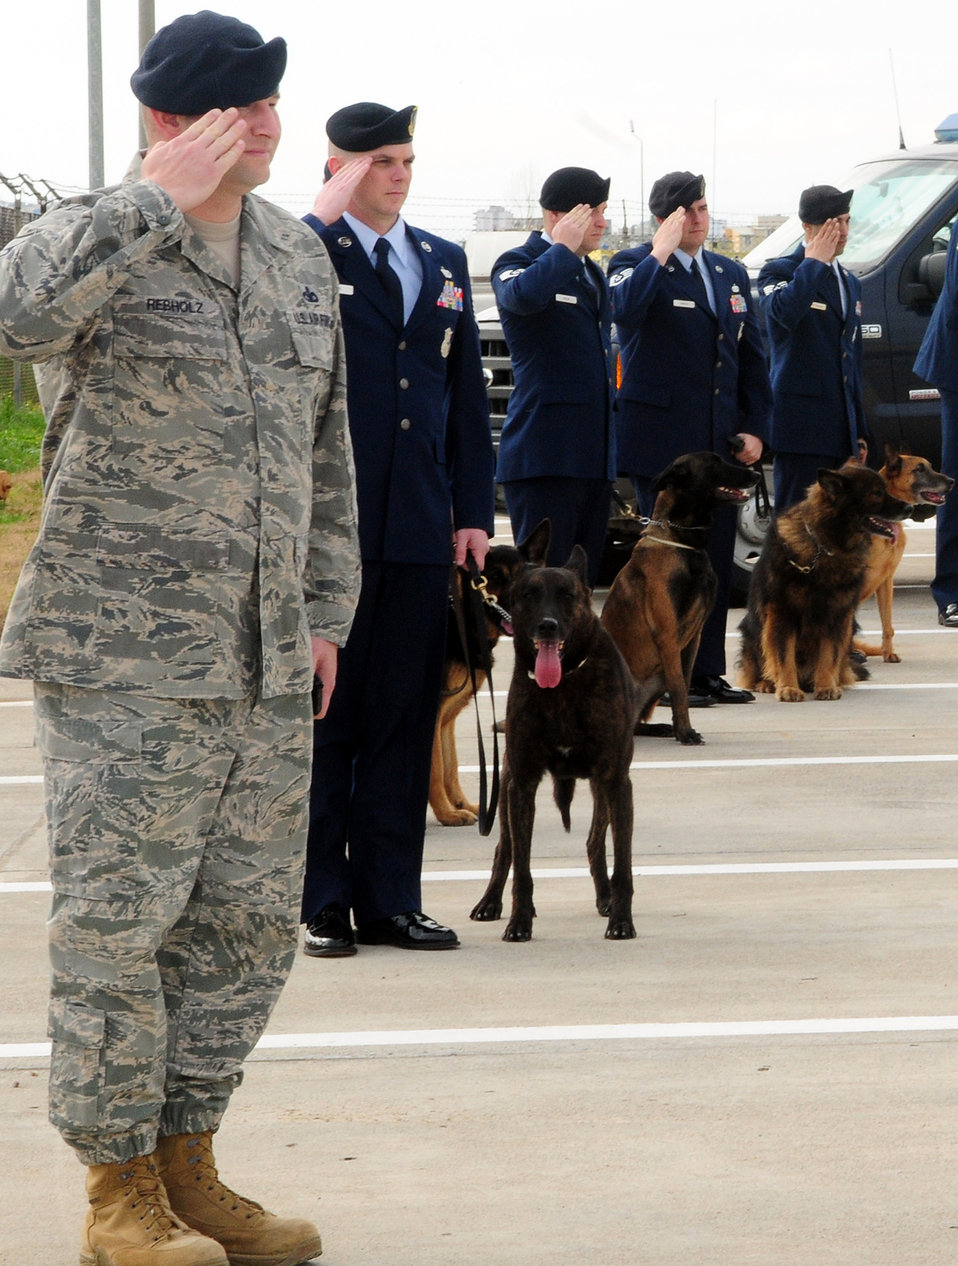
Incirlik members honor fallen SFS defender

39th Security Forces Squadron military working dog handlers salute during the playing of the national anthem during a memorial service in honor of Ronnie, a fallen MWD Feb. 25, 2010, at Incirlik Air Base, Turkey.